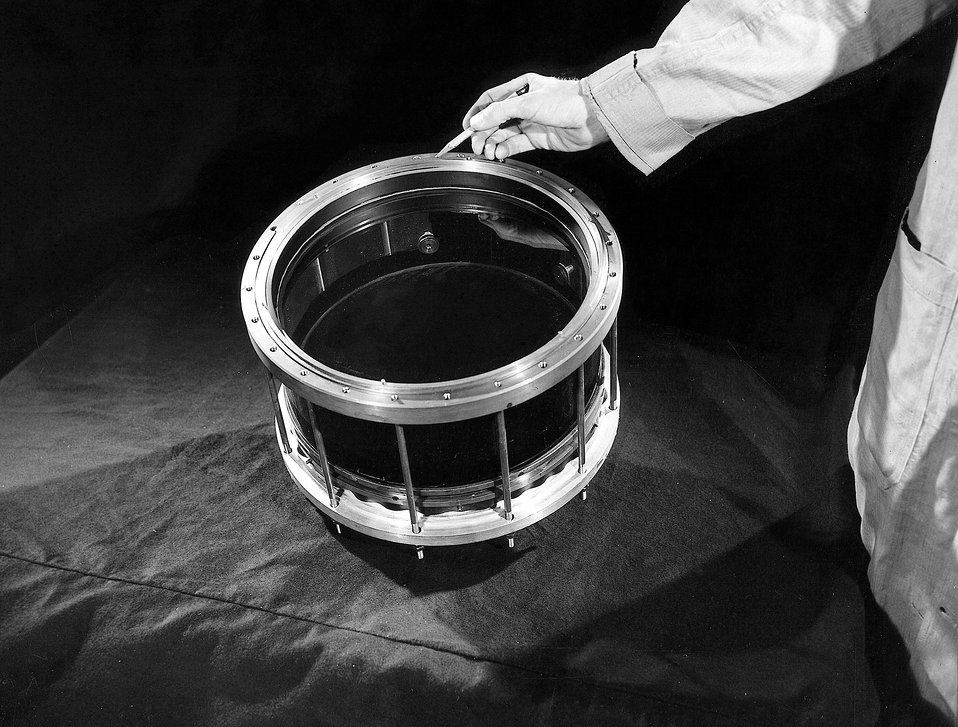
The Wilson Cloud Chamber at AEC's Brookhaven National Laboratory is used for cosmic ray studies. c. 1955